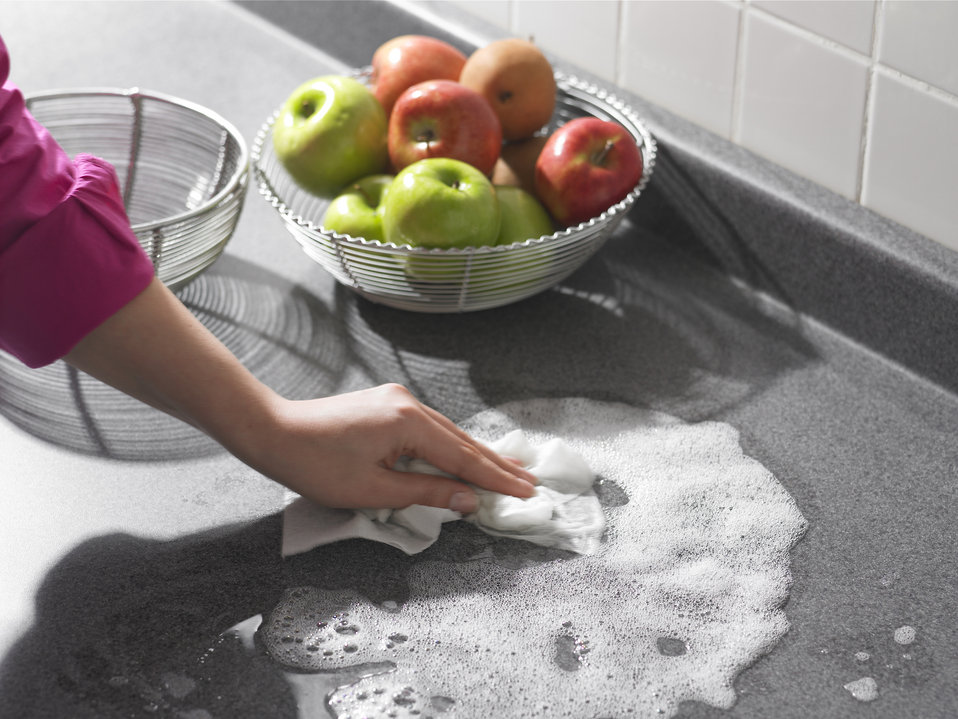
It is important to prevent cross-contamination from raw meat or poultry juices by washing counter tops and sinks with hot, soapy water. For extra protection, you may sanitize with a solution of 1 tablespoon of unscented, liquid chlorine bleach per gallon of water.